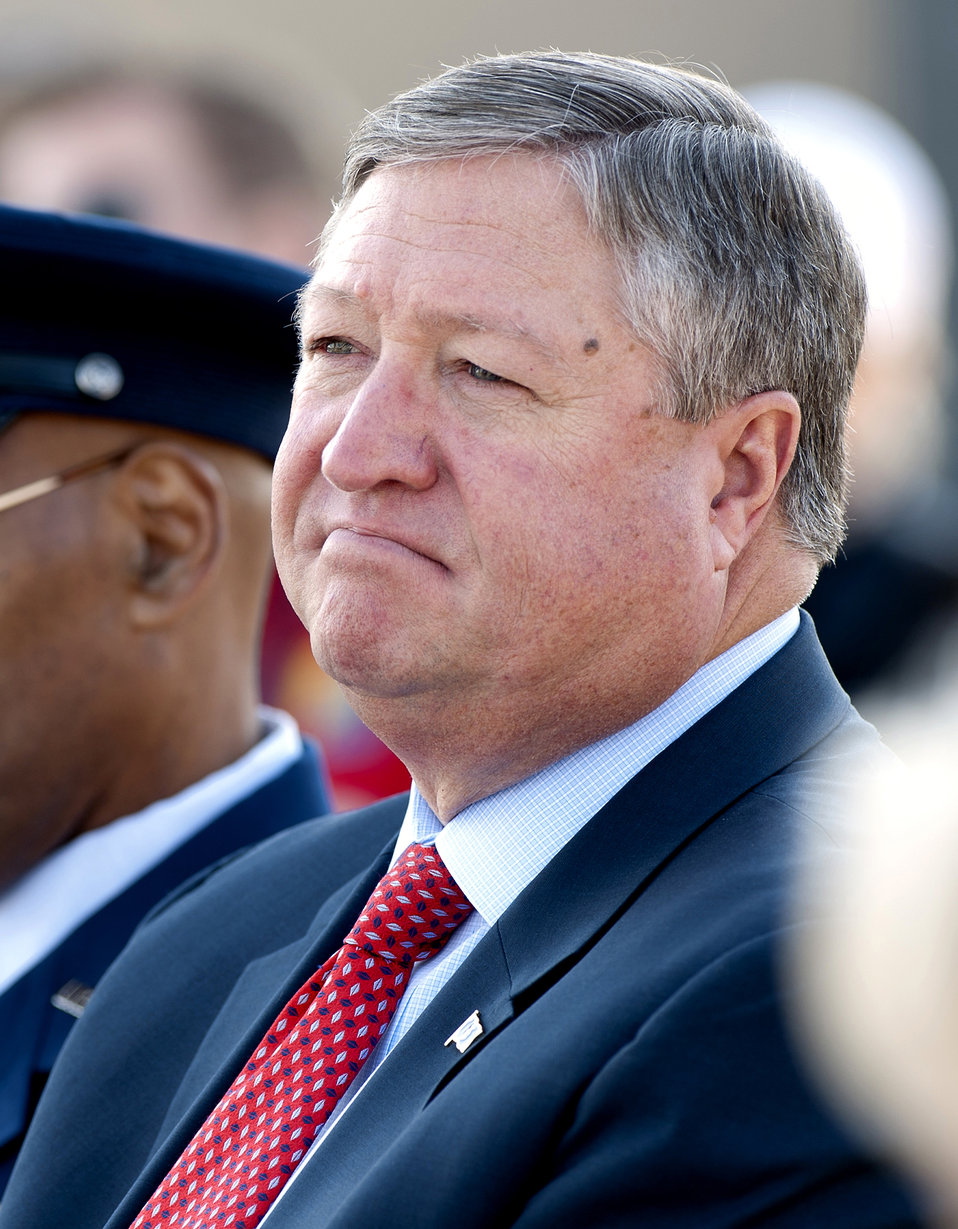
Veterans Day

Secretary of the Air Force Michael Donley attends a wreath laying ceremony in observance of Veterans Day on Nov. 11, 2012, at the Air Force Memorial in Arlington, Va.